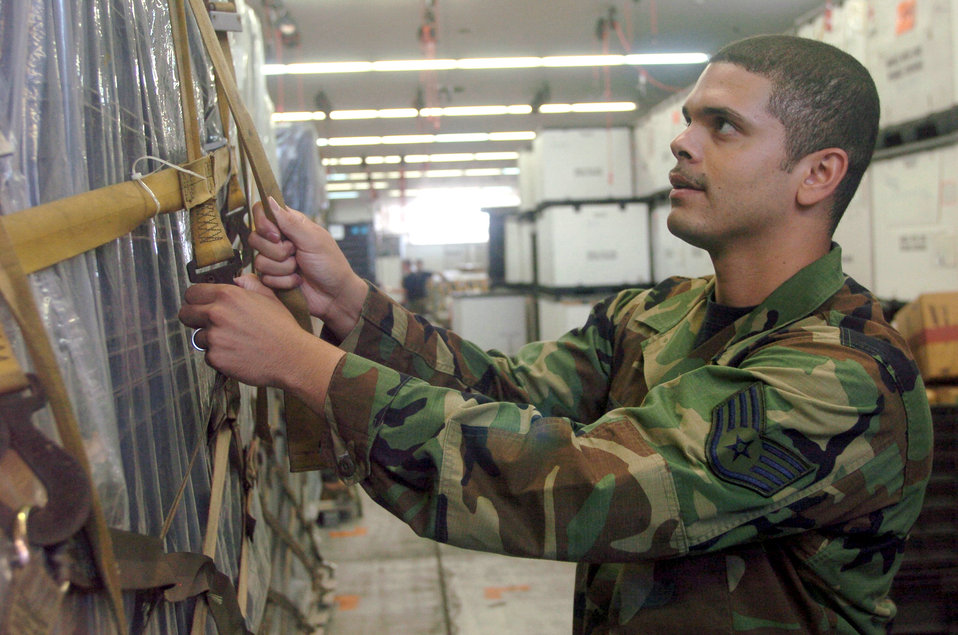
Airmen ensure medical lifeline in Pacific

YOKOTA AIR BASE, Japan -- Staff Sgt. Ken Abernathy checks the straps on a cargo pallet during an inspection at a warehouse here. Sergeant Abernathy and other medical logistics technicians from the 374th Medical Group handle about $24 million dollars worth of medical war reserve materiel supplies and equipment here for military combat and contingency operations.